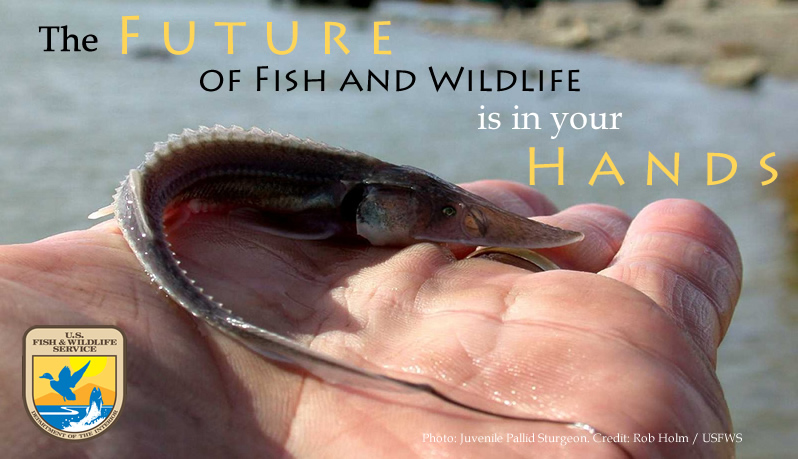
In Your Hands